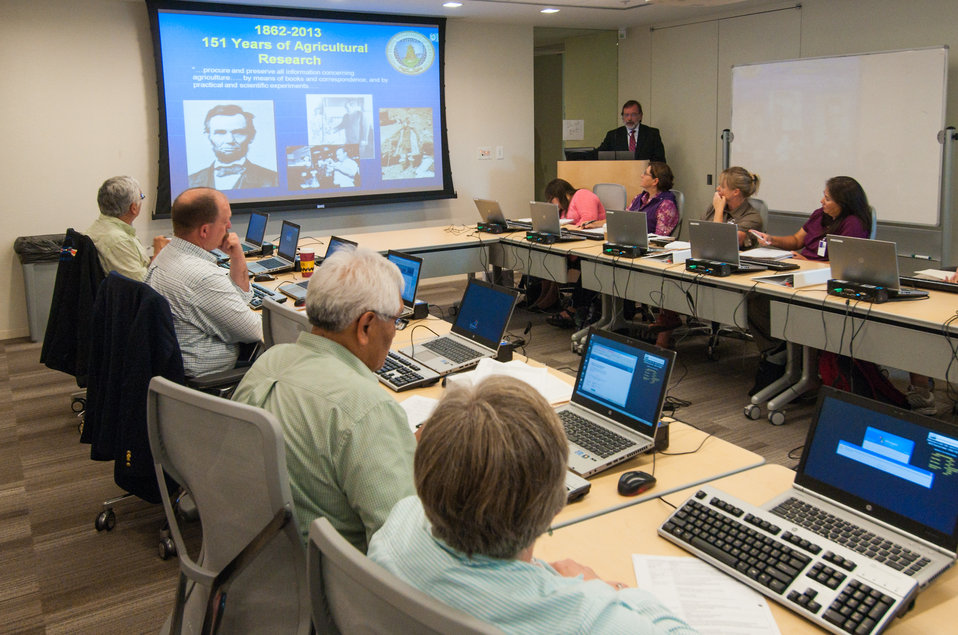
U.S. Department of Agriculture (USDA) Agricultural Research Service (ARS) Beltsville Agricultural Research Center, Agricultural Research Service Director Steven Shafer discusses the history and role of agricultural research at the United States Department of Agriculture at the USDA 2013 Land-Grant Development Tribal Fellows Program held in Washington, D.C. on Monday, Jun. 03, 2013.